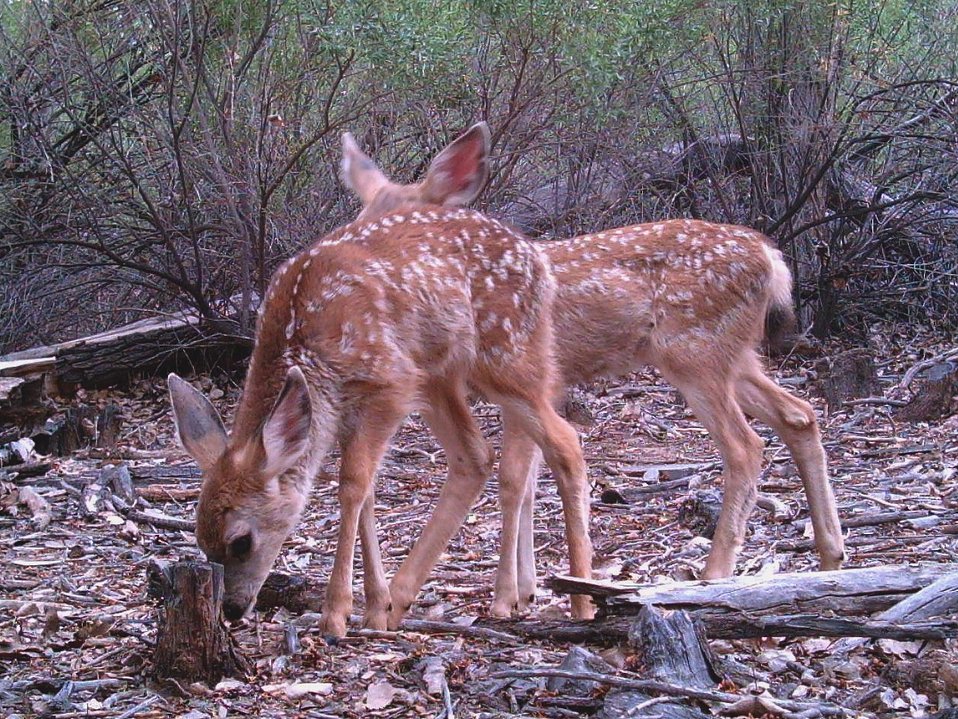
mule deer fawns

Bosque del Apache National Wildlife Refuge, NM
Camera trap project by Matt Farley, Jennifer Miyashiro, and J.N. Stuart.